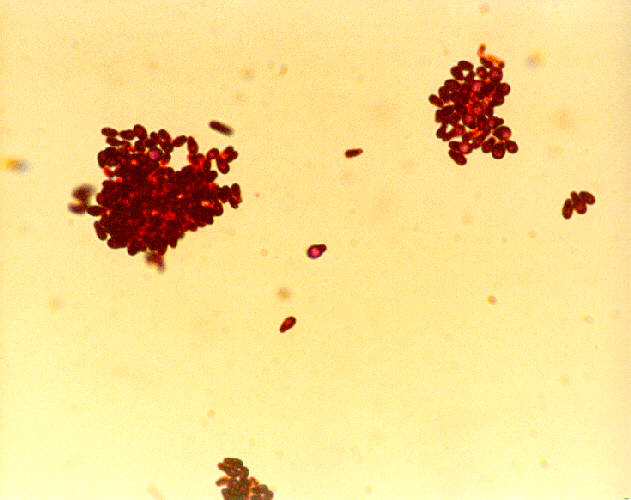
This Gram-stained photomicrograph depicts numbers of Malassezia pachydermatis fungal organisms.